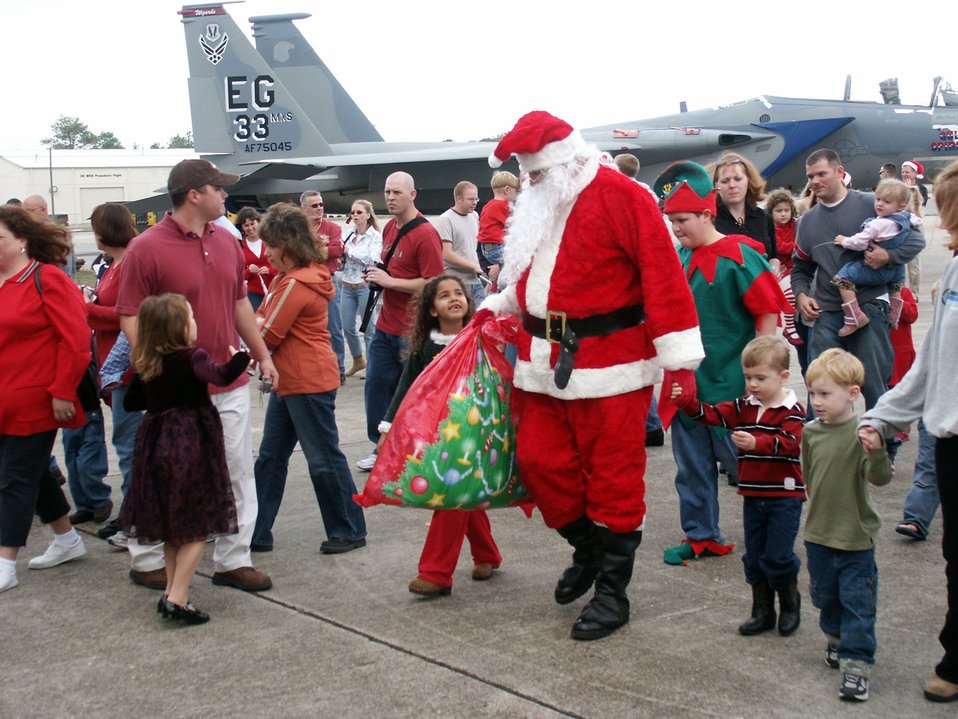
Early visit

EGLIN AIR FORCE BASE, Fla. (AFPN) -- Santa Claus makes his way to the 33rd Fighter Wing children's Christmas party. As part of the celebration, Santa took gift requests and posed for pictures.